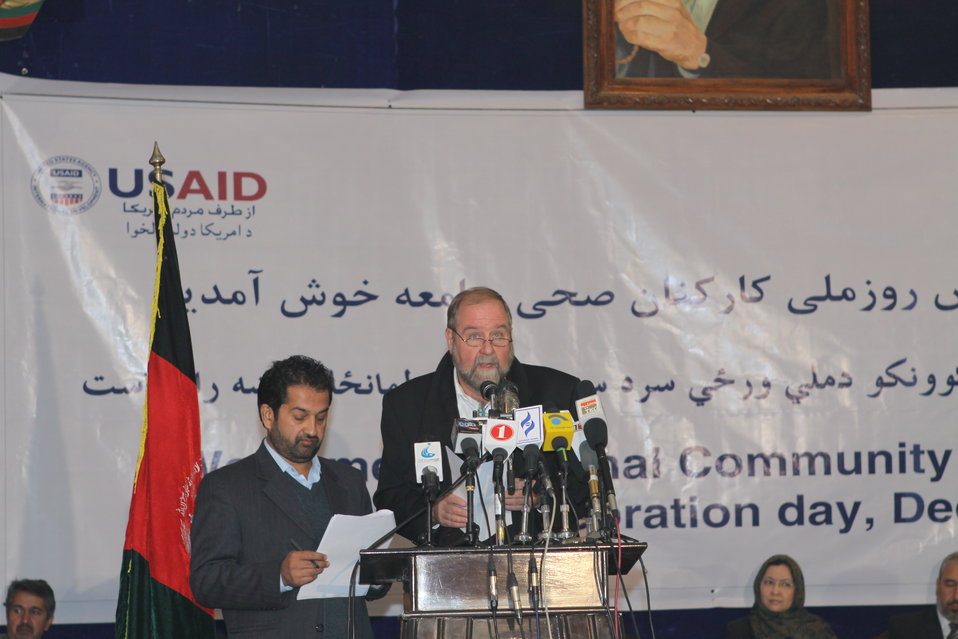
Community Health Workers Celebrated

Kabul, Afghanistan | December 5, 2010 — In support of the United Nations designated International Volunteer Day for Economic and Social Development, Afghanistan’s Ministry of Public Health celebrated its annual Community Health Worker Day today. Acting Minister of Public Health Dr. Suraya Dalil, USAID Senior Deputy Mission Director Robert Hellyer, other government officials, and international donors joined in recognizing the critical contribution of community health workers in Afghanistan and encouraging them to continue their voluntary support to their communities.
The event praised the contributions of the more than 22,000 volunteers throughout the country who deliver community level health-education, counseling, and services out of village health posts located in private homes. The Ministry of Public Health envisioned that community-based healthcare programs will actively encourage communities and families to adopt healthy lifestyles and behaviors, and provide families access to high quality and socially acceptable preventative medicine and life-saving services.
“We have 22,000 community health workers in Afghanistan that are able to implement the basic and standard medicines. They all have been trained through a job description,” said Minister Dalil. Addressing the health workers, she added, “I am proud and feel powerful that I have people like you.”
USAID-funded health projects collaborate closely with the Ministry of Public Health to improve the health and nutritional status of Afghans, provide quality primary healthcare, and promote healthy behaviors at the community and household-levels. USAID supported the training of more than 9,000 of the volunteer community health workers currently working in Afghanistan.
“On behalf of the American people, I congratulate the Community Health Workers for their diligence to gain the skills and knowledge necessary to serve their communities in this important role,” said USAID Senior Deputy Mission Director Hellyer. “USAID strongly supports community based health care and believes that quality community-based health services are essential to reaching Afghanistan’s Millennium Development Goals.”
To support the Basic Package of Health Services, USAID assisted in developing the community health worker training manual, helped train community health worker supervisors and master-trainers, facilitated in-service training, and produced and developed reporting tools, job aids, and education materials.